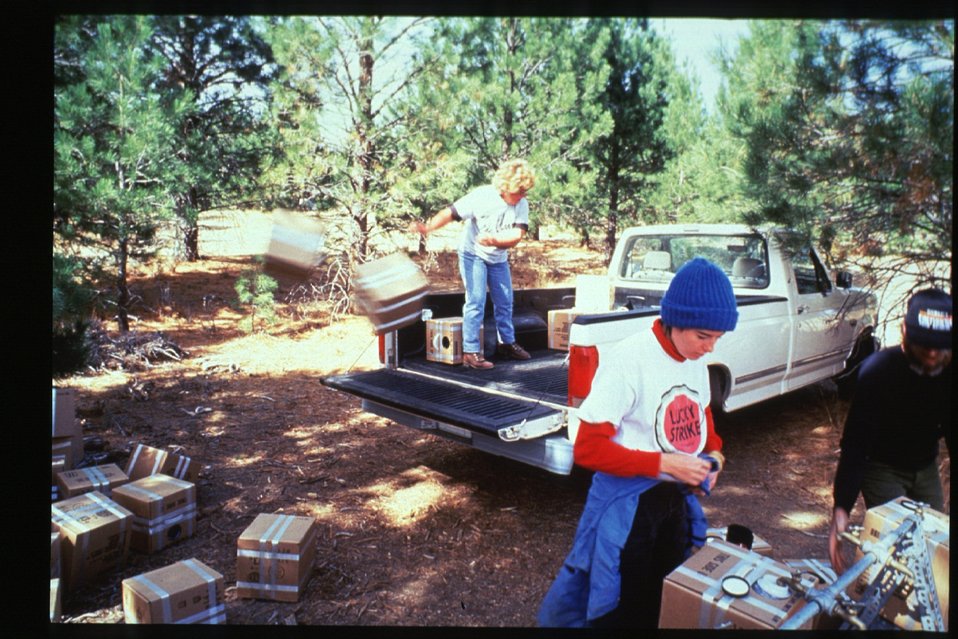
Boise Foothills Fire Danskin Mountains and South Fork of Boise River Supplies Four River Field Office LSRD Lower Snake River District